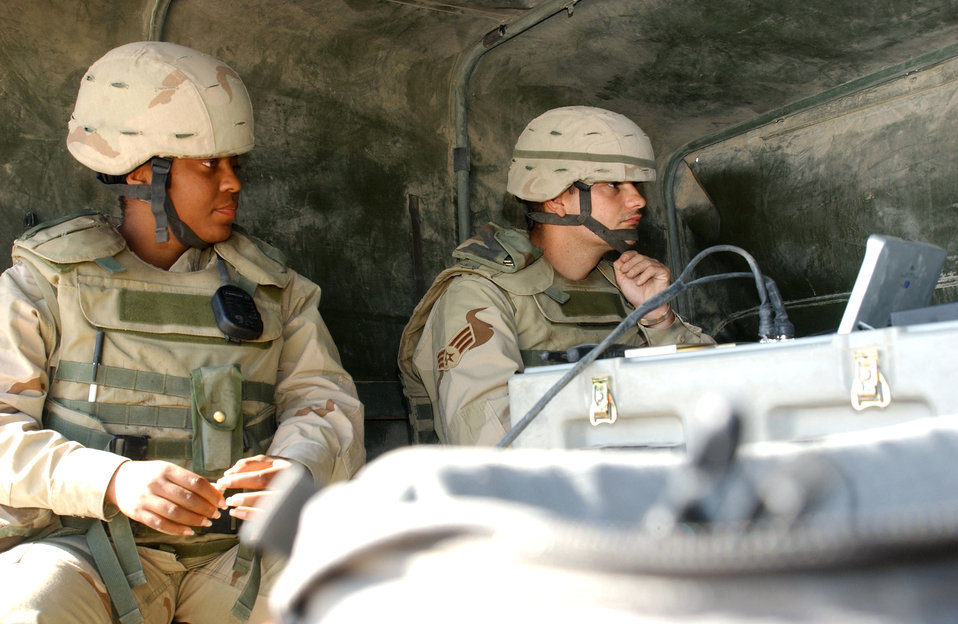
Mini-UAVs

ALI BASE, Iraq (AFPN) -- Staff Sgt. Chenoa Abbott (left) and Senior Airman Shawn Fernandez review the real-time video sent by a miniature unmanned aerial vehicle immediately after its launch. Sergeant Abbott and Airman Fernandez are both members of the 407th Expeditionary Security Forces force protection airborne surveillance system team.